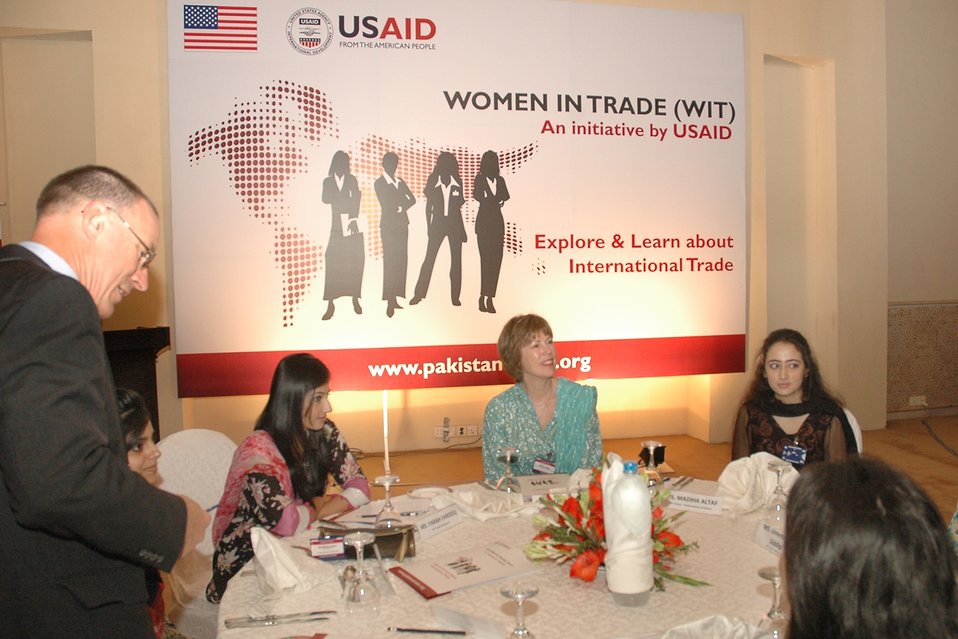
Launch of USAID's Women in Trade Initiative

The international trade sector in Pakistan currently employs very few women in managerial positions. A recent USAID-funded study has shown women comprise less than 10 percent of management and 20 percent of junior staff in trade companies. The Women in Trade initiative will work to set up linkages between international firms and local universities, so that more women have opportunities to explore careers in international trade. The USAID-funded initiative will also help companies select the best-suited male and female university graduates for training and potential future recruitment.